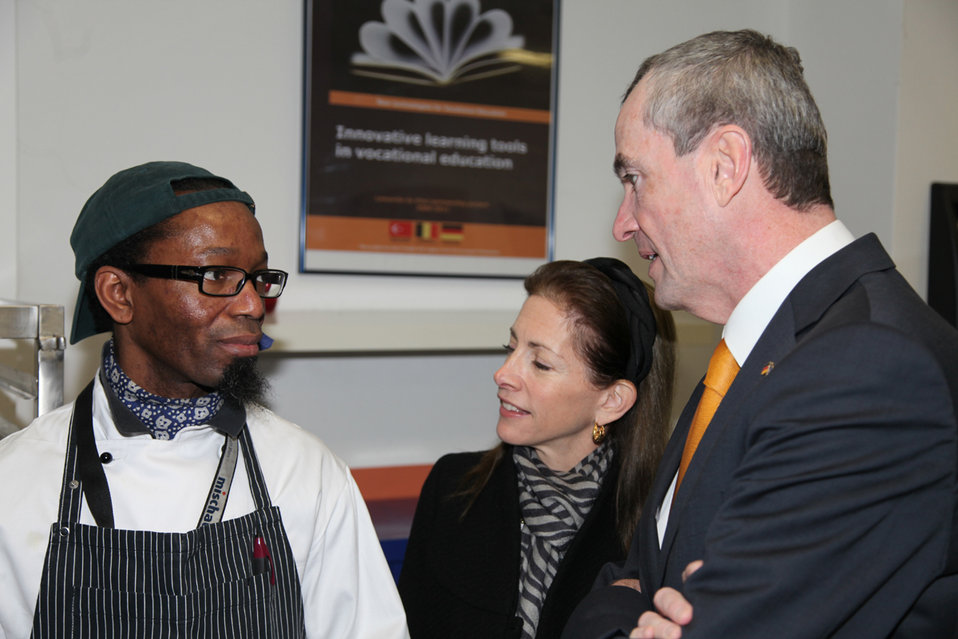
Ambassador Murphy and His Wife Visit Bildungswerk - A Skills Training Facility for Immigrants

U.S. Ambassador to Germany Philip D. Murphy and his wife visit the Bildungswerk, a skills training facility for immigrants, and talk to a cook who is a U.S. citizen in Kreuzberg, Germany, on March 12, 2010.